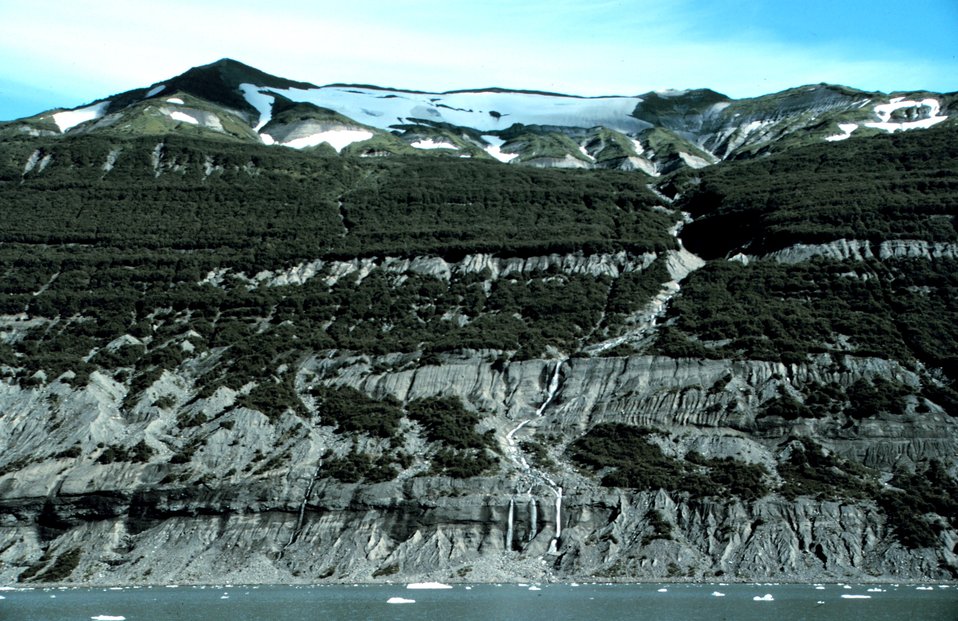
Tann Fjord, an arm of Icy Bay.